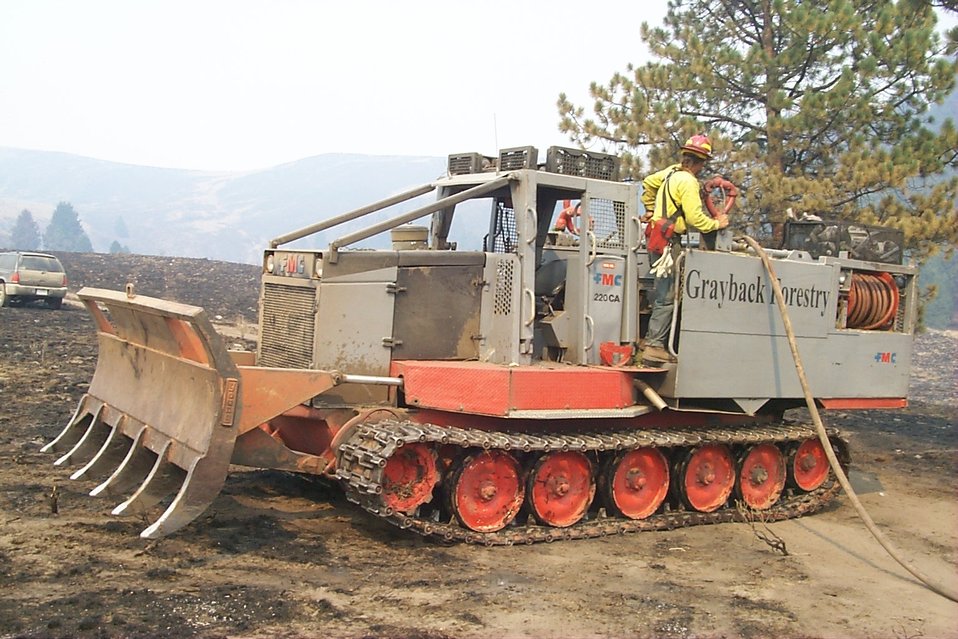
Dozer Fire Clearwater Fire Salmon Field Office USRD Upper Snake River District